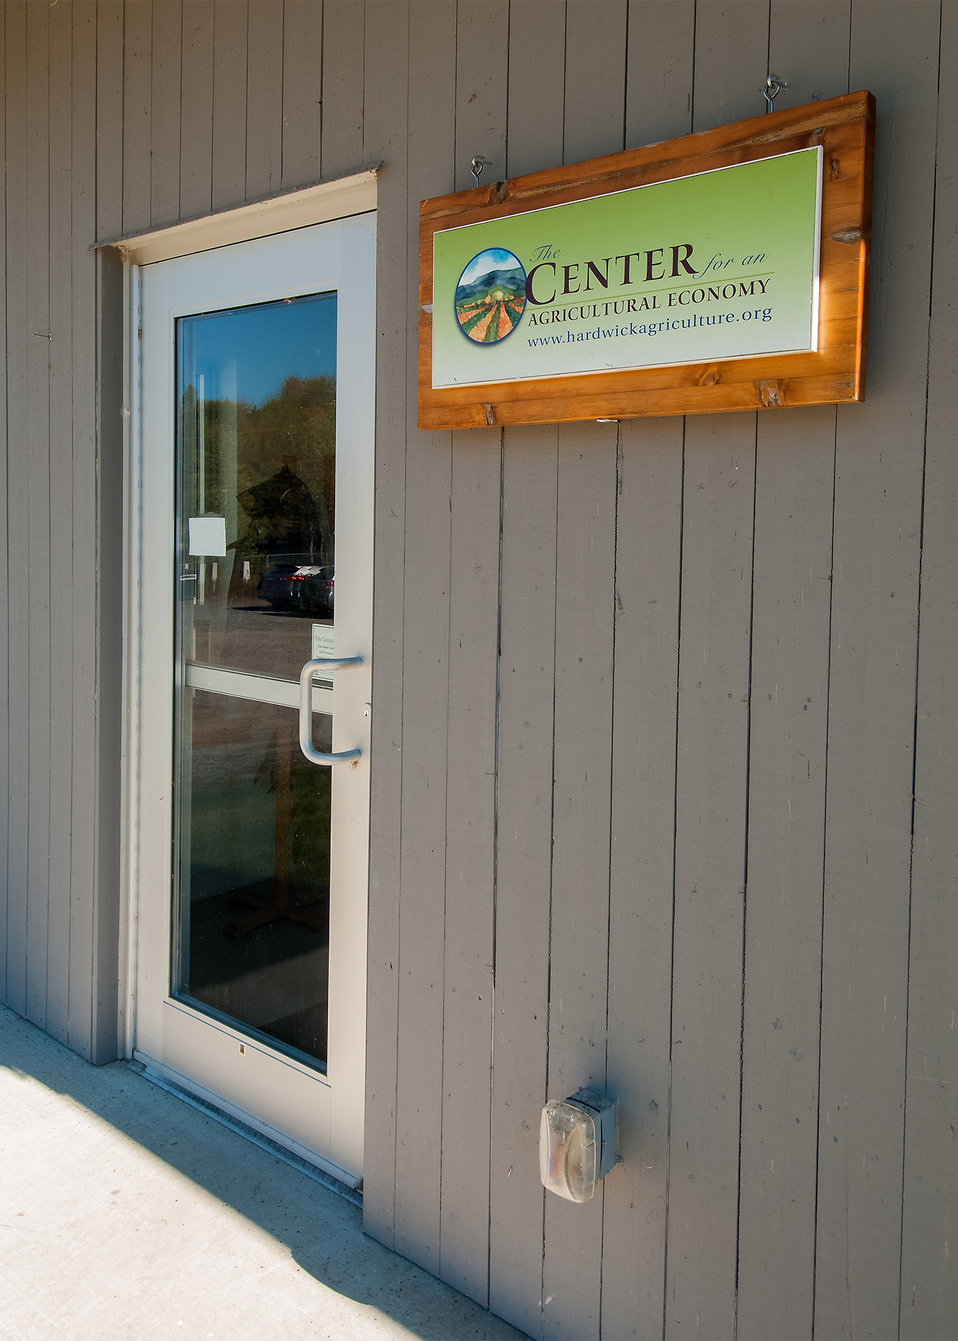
The Vermont Food Venture Center, a non-profit multi-purpose incubator kitchen and food processing facility operated by the Center for an Agricultural Economy in Hardwick, VT received assistance through a U.S. Department of Agriculture (USDA) Rural Development (RD) Rural Business Enterprise Grant (RBEG). The grant offers farmers in a region of rural America that celebrates food, farm and local economy the tools necessary to convert crops to value added business to start or expand their food-based business with the potential to create jobs and increase economic opportunity on Sep. 19, 2013.